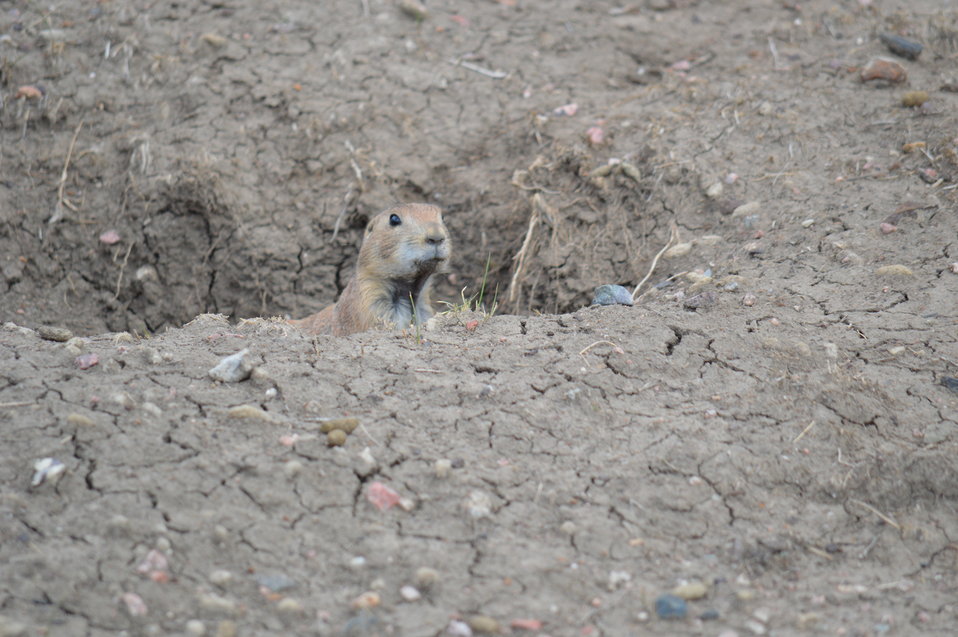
Interns visit the NBFFCC

A prairie dog peeks out. In the summer of 2012, USFWS Region 6 interns visited the National Black-footed Ferret Conservation Center (NBFFCC) in Colorado to learn how the program reintroduces the endangered Black-footed ferret back into its native habitat.